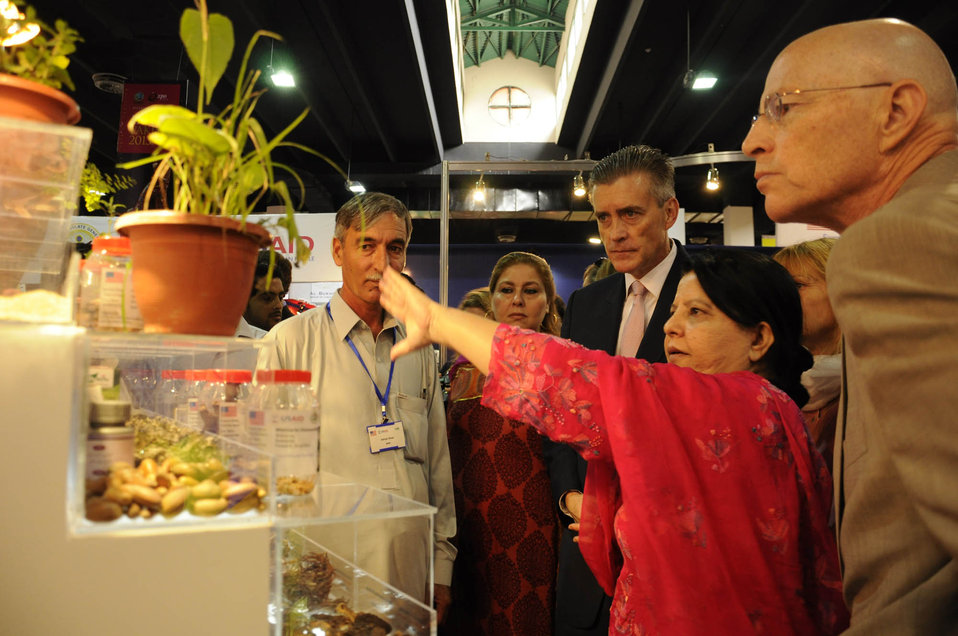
US Ambassador Mr. Richard G. Olson visiting the stall of Medicinal and Aromatic Plants Value Chain of USAID's Entrepreneurs Project